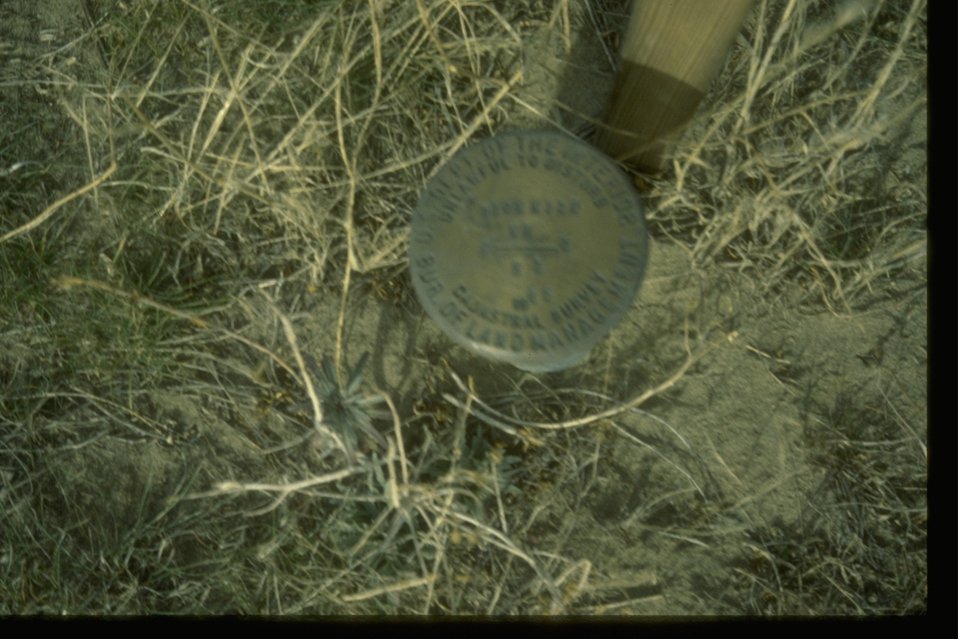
Historical BLM brass cap marks cadastral survey of a township corner.